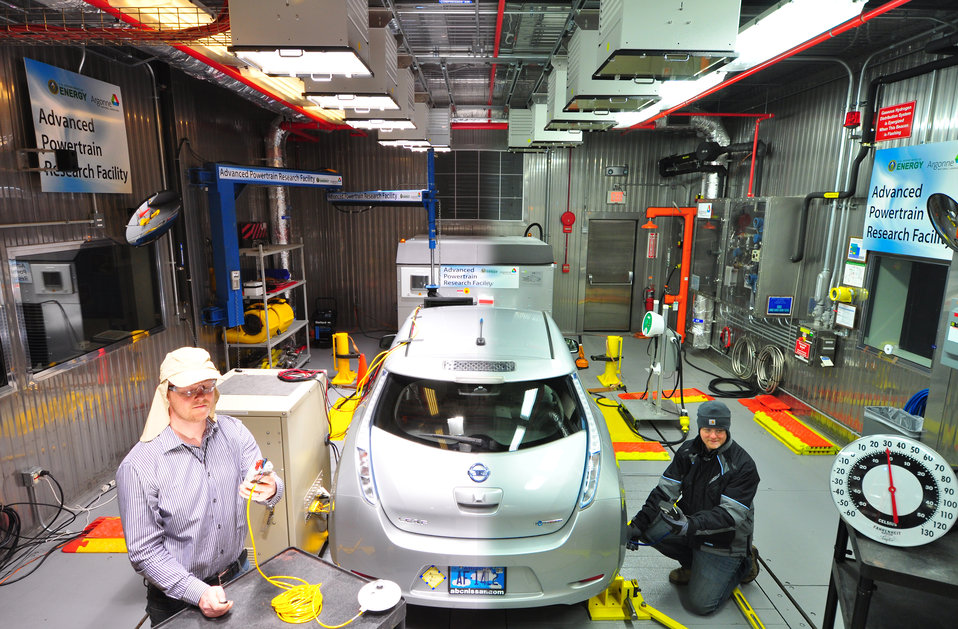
IN A SPLIT SCREEN IMAGE, ARGONNE NATIONAL LABORATORY ENGINEER EVALUATES AN ELECTRIC VEHICLE UNDER EXTREME HOT (LEFT) AND COLD CONDITIONS (RIGHT).

The Advanced Powertrain Research Facility's Environmental Test Cell is equipped to evaluate vehicles and components at a temperature range of 20-95 degrees Fahrenheit.